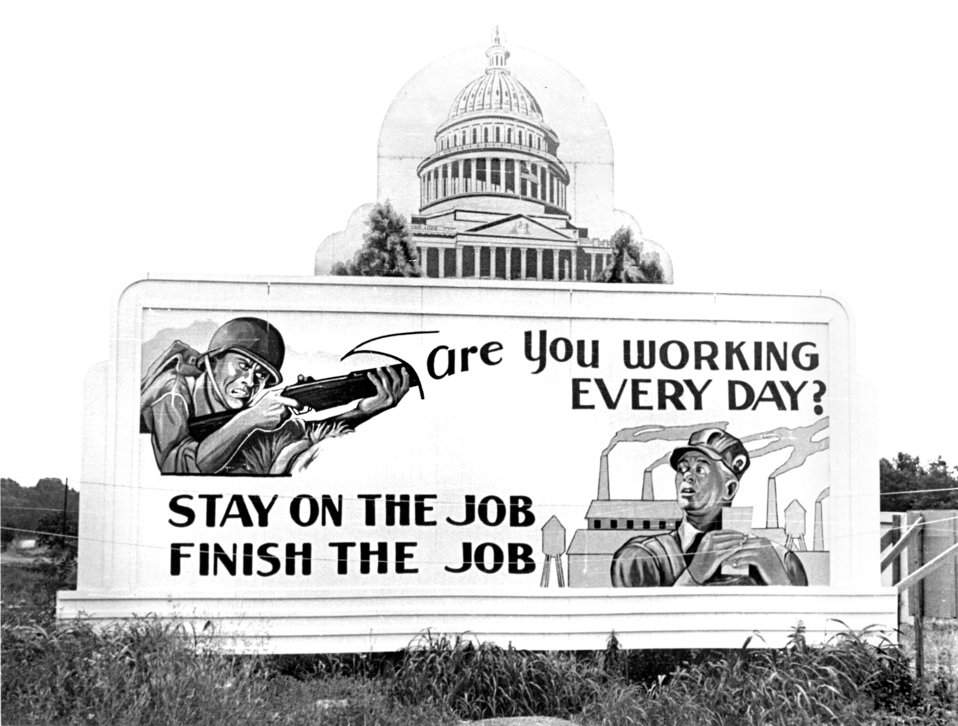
Billboard 1944 Oak Ridge

roll264-15 DOE photo Ed Westcott 6-5-1944 Oak Ridge Tennessee